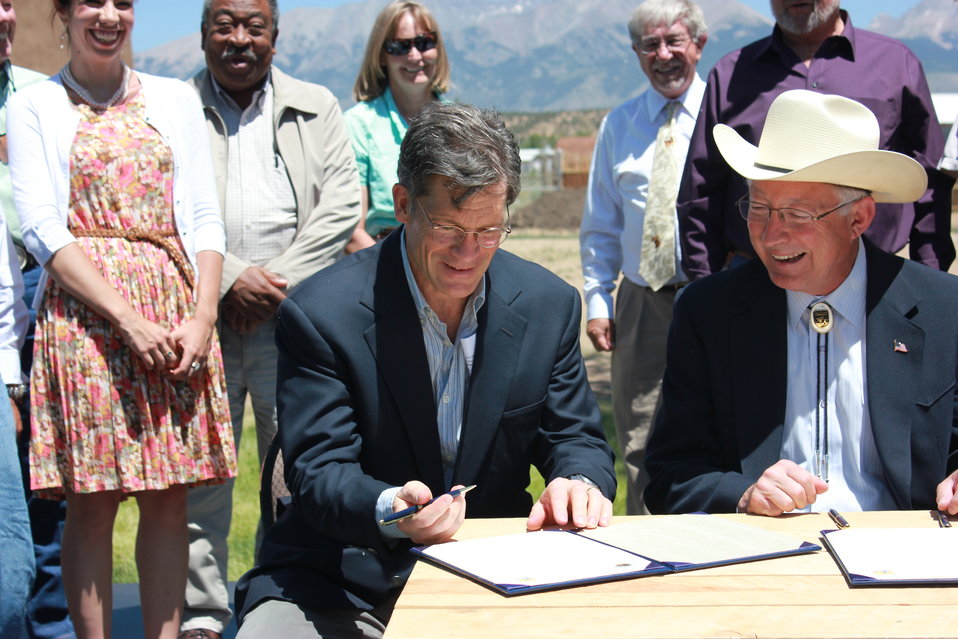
Historic Conservation Easement in Sangre de Cristo Mountains